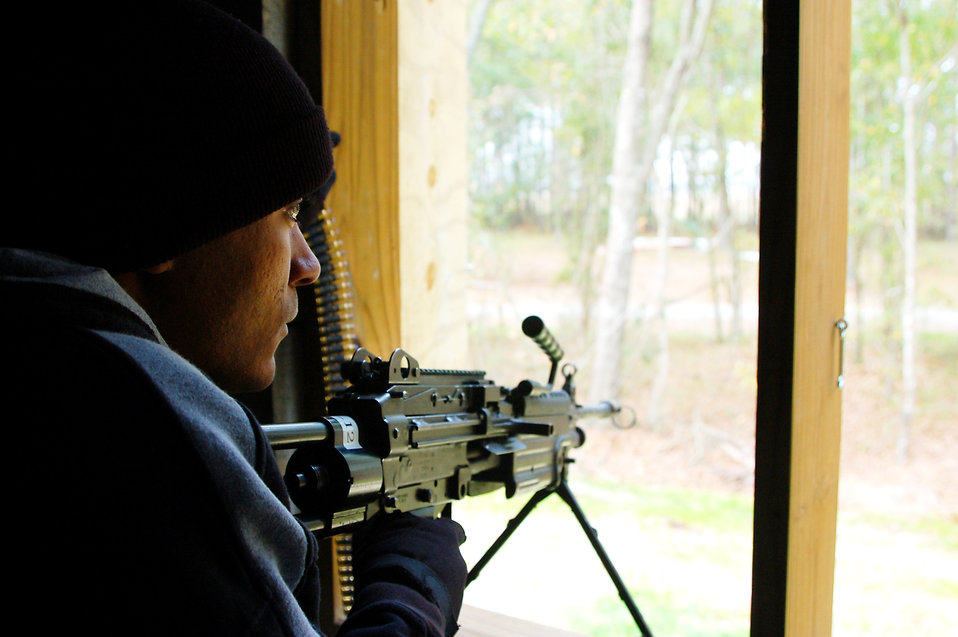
Waiting to spring the trap

Senior Airman Jeffrey Polanco acts as an opposing force role-player